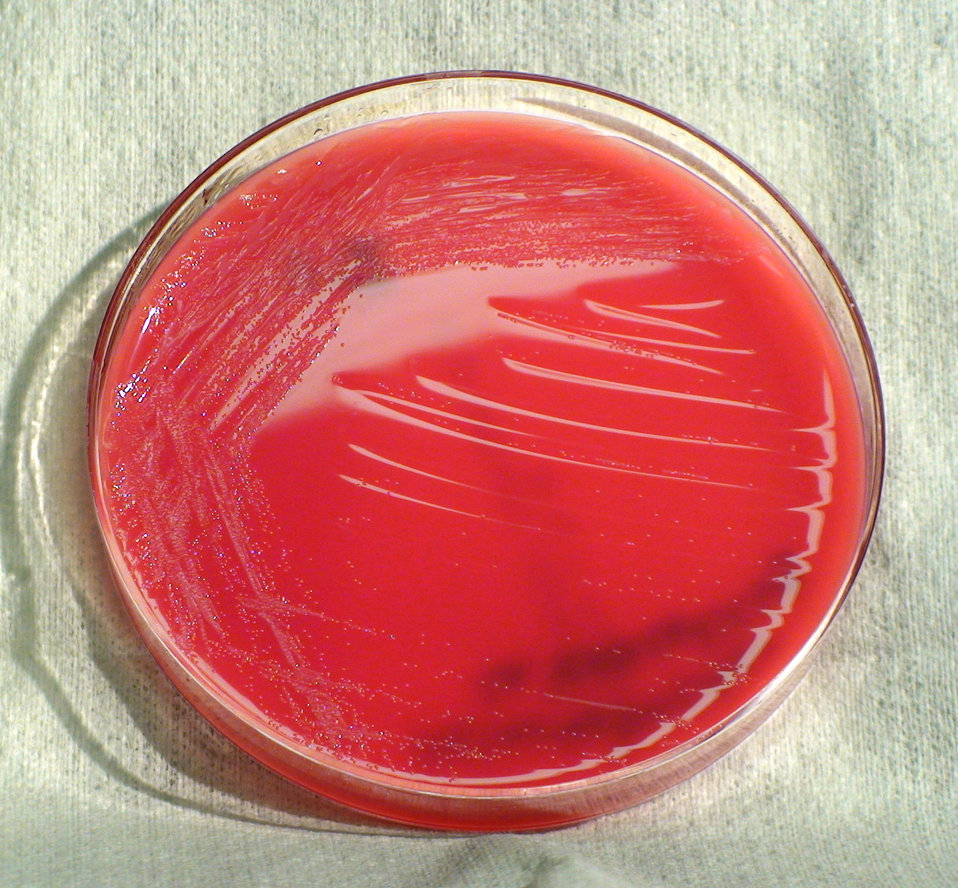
This photograph depicts light colonial growth displayed by Gram-negative Acinetobacter calcoaceticus bacteria, which was grown on a medium of sheep's blood agar (SBA), for a 24 hour time period, at a temperature of 37�C. See PHIL 12374, for a closer view of these bacterial colonies.